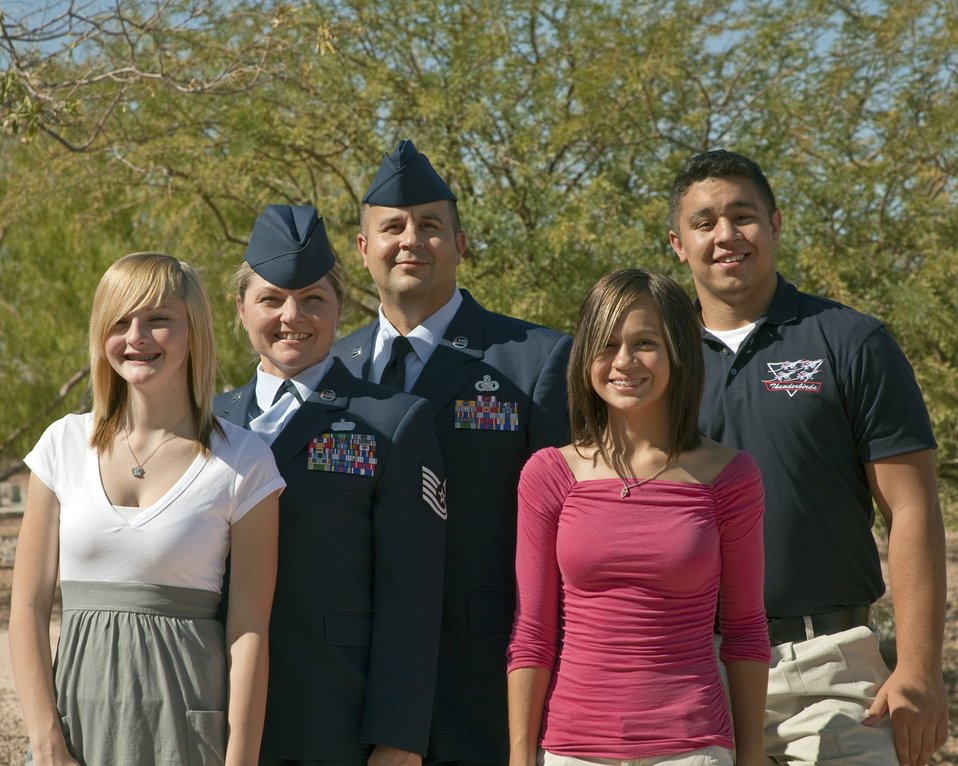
Year of the Family

The Ojala family from Nellis Air Force Base, Nev., are the Air Force?s military family of the year. They were in Washington to compete in the National Military Family of the Year completion. From left to right are Kalie Ojala, Tech. Sgt. Thane Ojala, Master Sgt. Wayne Ojala, Katherine Ojala and Jari Ojala.